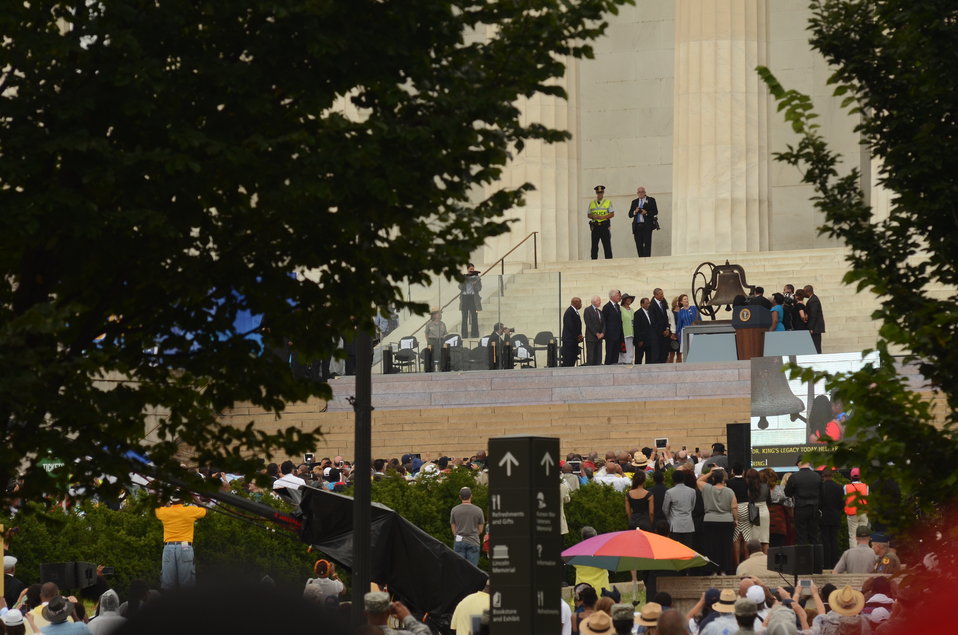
The Bell from the bombed out 16th Street Baptist Church, Birmingham, Al, is rung at the Lincoln Memorial for the March on Washington, D.C., on Wed., Aug. 28, 2013.